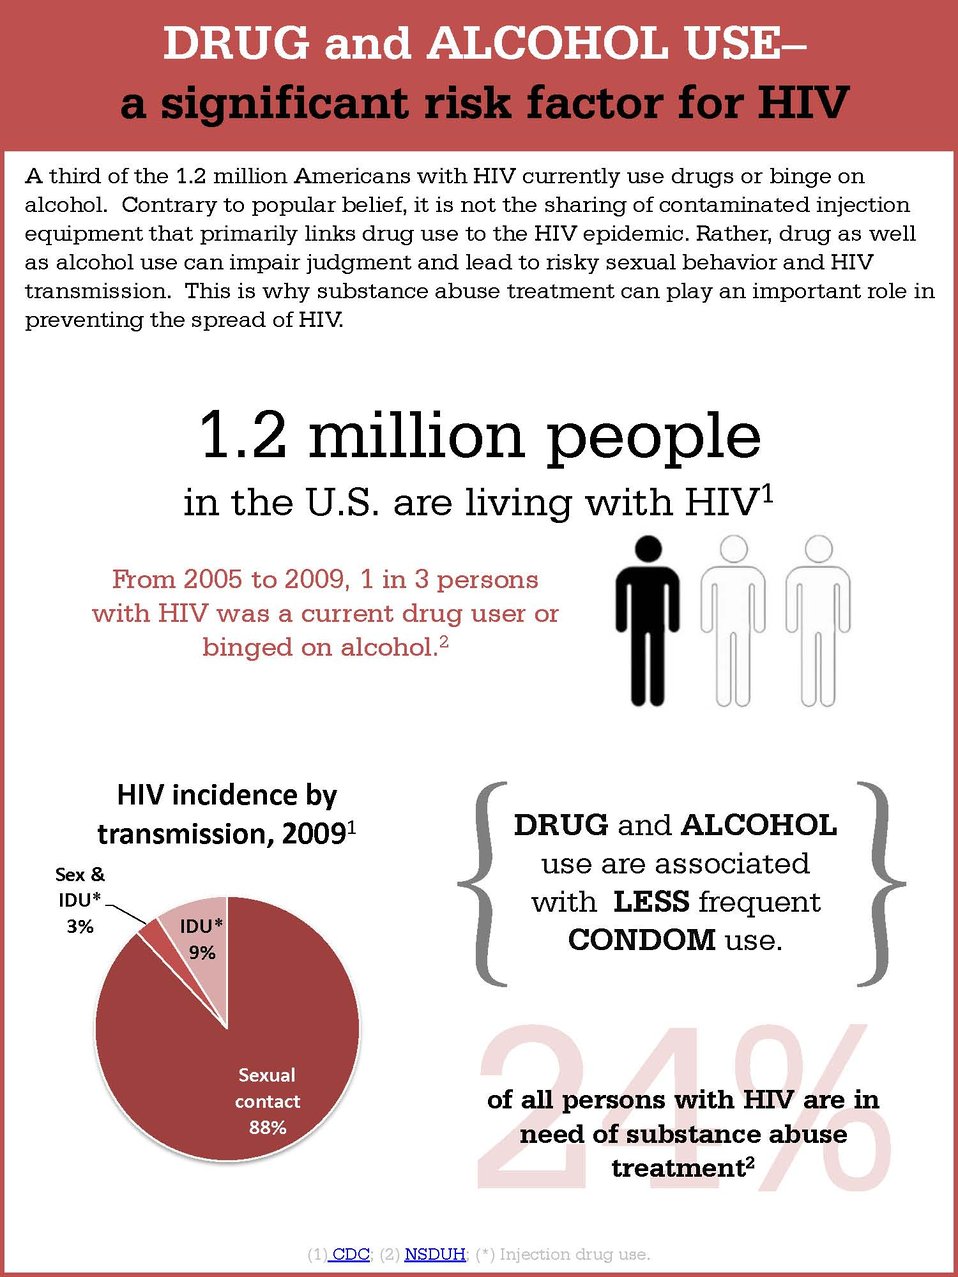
Drug and Alcohol Use - A Significant Risk Factor for HIV

A third of the 1.2 million Americans with HIV currently use drugs or binge on alcohol. Contrary to popular belief, it is not the sharing of contaminated injection equipment that primarily links drug use to the HIV epidemic. Rather, drug as well as alcohol use can impair judgment and lead to risky sexual behavior and HIV transmission. This is why substance abuse treatment can play an important role in preventing the spread of HIV

Top figure: 1.2 million people in the U.S. are living with HIV, From 2005 to 2009, 1 in 3 persons with HIV was a current drug user or binged on alcohol.

Bottom left figure: HIV incidence by transmission, 2009. Sexual contact - 88%, Intravenous Drug User (IDU) - 9%, Sex & IDU, 3%

Bottom right figure - Drug and alcohol use are associated with less frequent condom use. 24% of all persons with HIV are in need of substance abuse treatment

From CDC - www.cdc.gov/hiv/resources/factsheets/ and NSDUH - www.samhsa.gov/data/2k10/HIV-AIDS/HIV-AIDS.htm